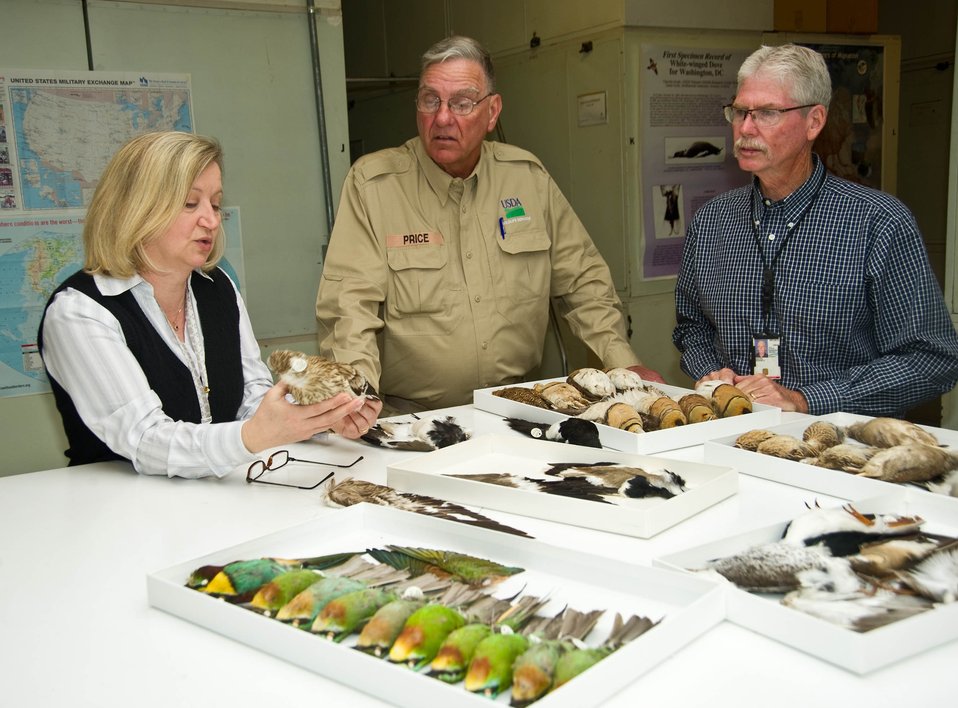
Smithsonian Institution National Museum of Natural History Research Scientist and Manger in the Feather Identification Lab Dr. Carla Dove, U.S. Department of Agriculture (USDA) Animal Plant Health Inspection Service (APHIS) Wildlife Biologists Keel Price and George Graves look over a sample of the birds in the Smithsonian collection on Tuesday, Mar. 19, 2013.